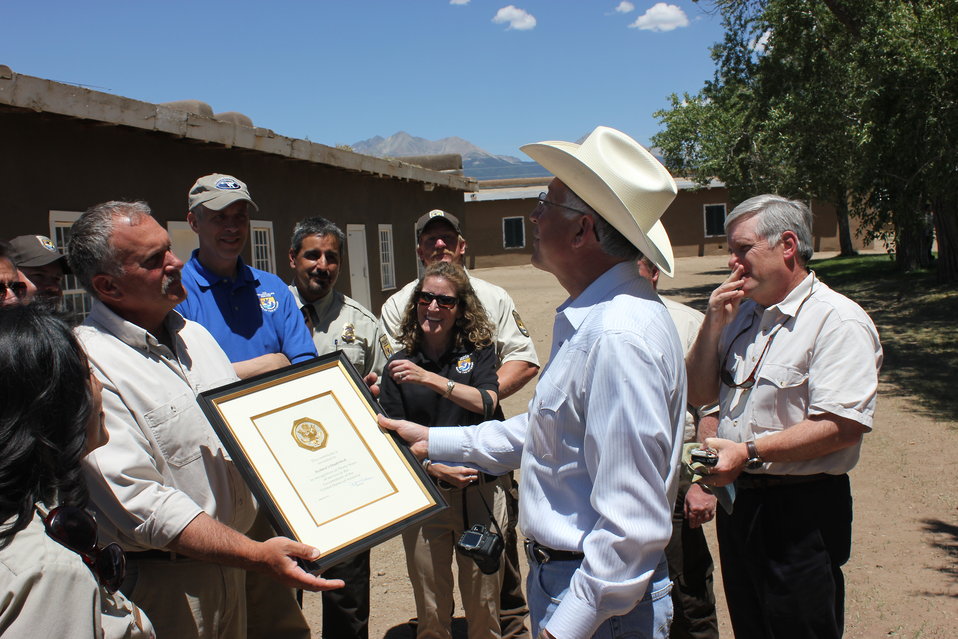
Historic Conservation Easement in Sangre de Cristo Mountains

Interior Secretary, Ken Salazar, and U.S. Fish and Wildlife Director, Dan Ashe, present Rick Schnaderbeck with an award for his many accomplishments throughout his 30 years with the Service.